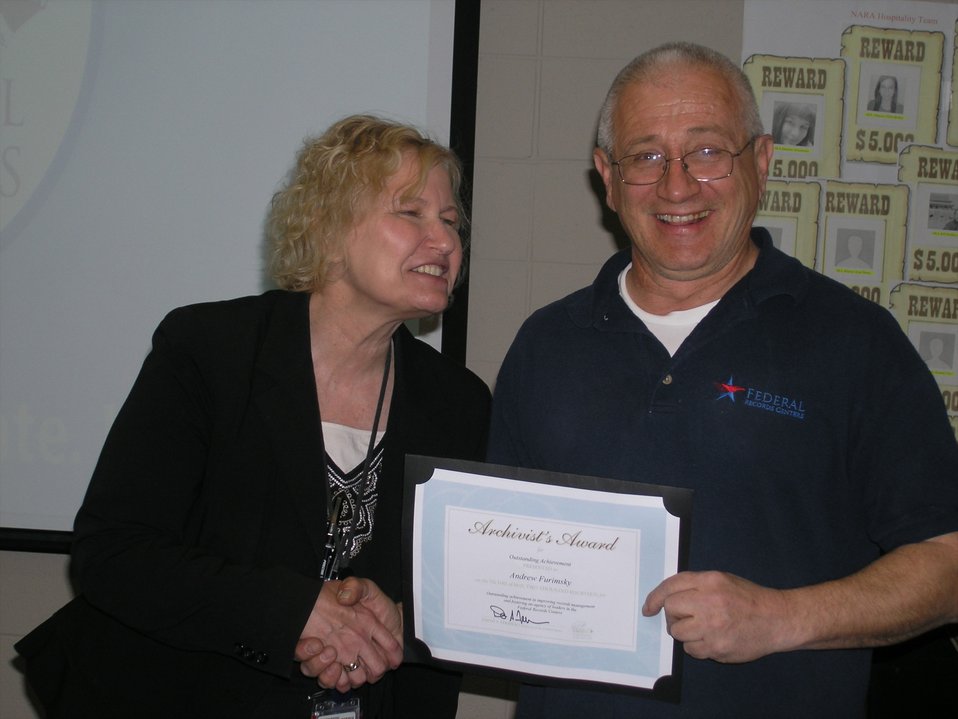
Pamela Wegner giving a certificate to Andrew Furimsky for exemplary work; Location: Chicago Federal Records Center, Chicago, IL